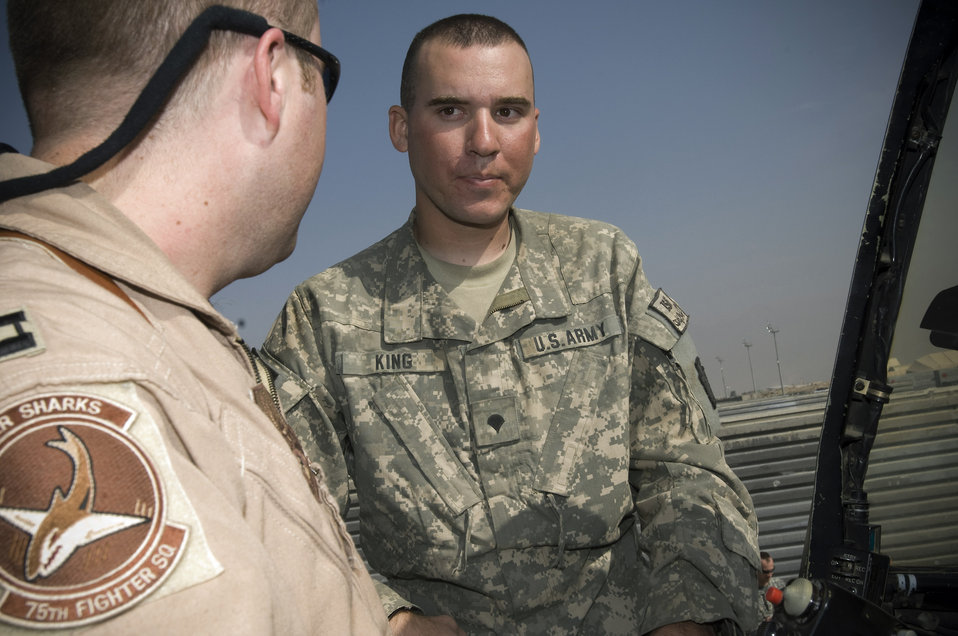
Air support unites Airmen, Soldiers in Afghanistan

Pennsylvania Army National Guard Spc. Kevin King talks with Capt. Robert Burdette during a tour of the A-10 Thunderbolt II Oct. 28 at Bagram Airfield, Afghanistan. Members from the 391st Expeditionary Fighter Squadron and the 75th Expeditionary Fighter Squadron hosted Soldiers who wanted to thank the pilots who protect ground forces with close-air support while engaged in firefights with enemy forces.